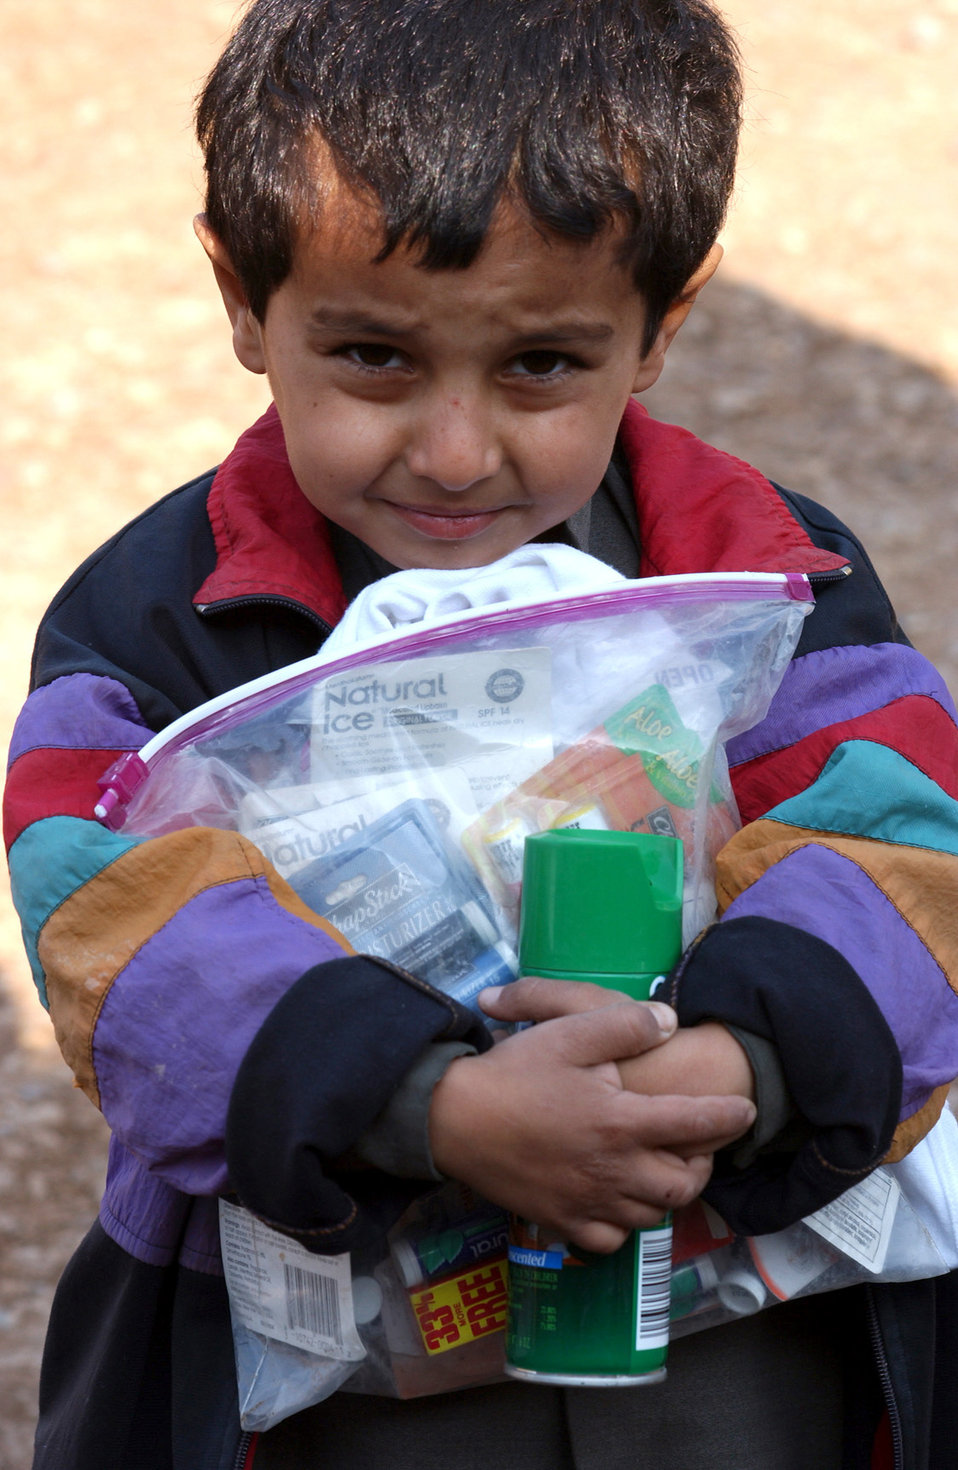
Medics aid villagers

ALBU ASSAD, Iraq -- A young boy gathers amenities airmen and soldiers gave away during a medical civil action program visit here. Air Force physicians and technicians joined an Army medical team to provide care to local residents Jan. 4.